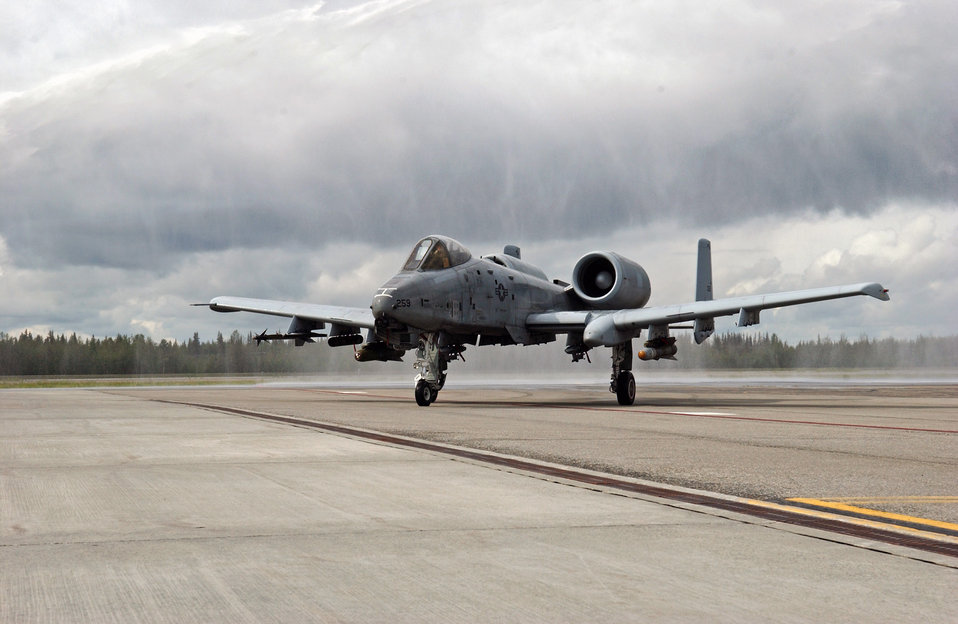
A-10s depart Eielson

Lt. Col. Quentin Rideout taxis his A-10 Thunderbolt II at Eielson Air Force Base, Alaska, July 31. The first two A-10s arrived at Eielson Dec. 18, 1981; the last two A-10s are set to leave Aug. 15 for Moody AFB, Ga., and Gowen Field, Idaho. Colonel Rideout is the 355th Fighter Squadron commander.